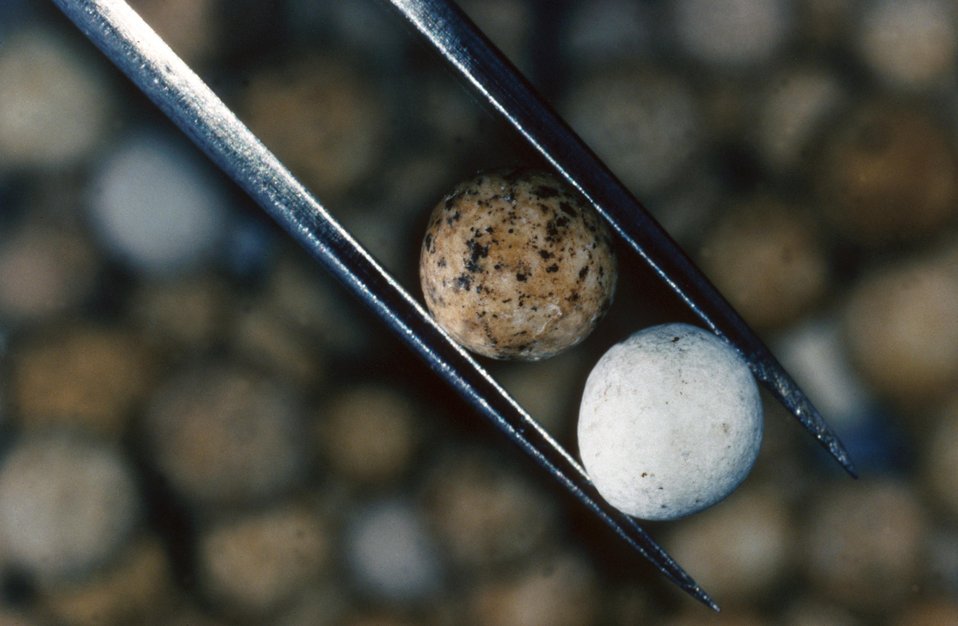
THE CERAMIC SPHERES, O.6 CM IN DIAMETER, USED IN THE MODIFIED HOT RECYCLED SOLID RETORTING PROCESS DEVELOPED AT LLNL.
LLNL'S MODIFIED HOT-RECYCLED-SOLID (HRS) RETORTING PROCESS IS BEING USED TO DECOMPOSE OR TREAT HARMFUL CHEMICALS AND COMPOUNDS. IN COLLABORATION WITH SANDIA, LLNL ADAPTED AN ON SITE PLANT TO DEMONSTRATE THE FEASIBILITY OF DECOMPOSING SODIUM NITRATE USING A CIRCULATING BED OF HOT CERAMIC SPHERES. RESEARCHERS ARE STUDYING THE FEASIBILITY OF PRETREATING THE MIXED WASTES STORED AT THE HANFORD, WA SITE. THIS MODIFIED HRS PROCESS HAS POTENTIAL FOR ADDRESSING MANY ASPECTS OF WASTE TREATMENT.